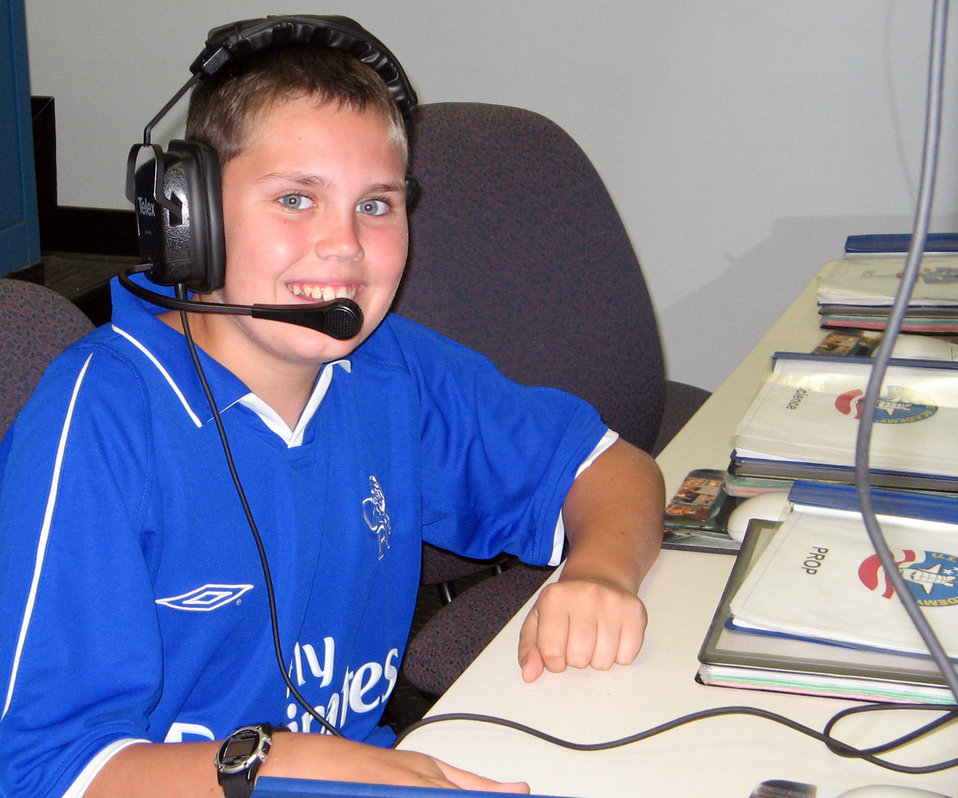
Servicemembers' children fly high at Space Camp

HUNTSVILLE, Ala. -- From mission control at Space Camp, Patrick Rounds, 12, helps get his shuttle crew safely on the ground. Patrick is one of 15 children of active-duty servicemembers who earned a scholarship to Space Camp this summer. While at camp, the students learn what it is like to be on a space shuttle during a mission and how things happen in mission control back on Earth.